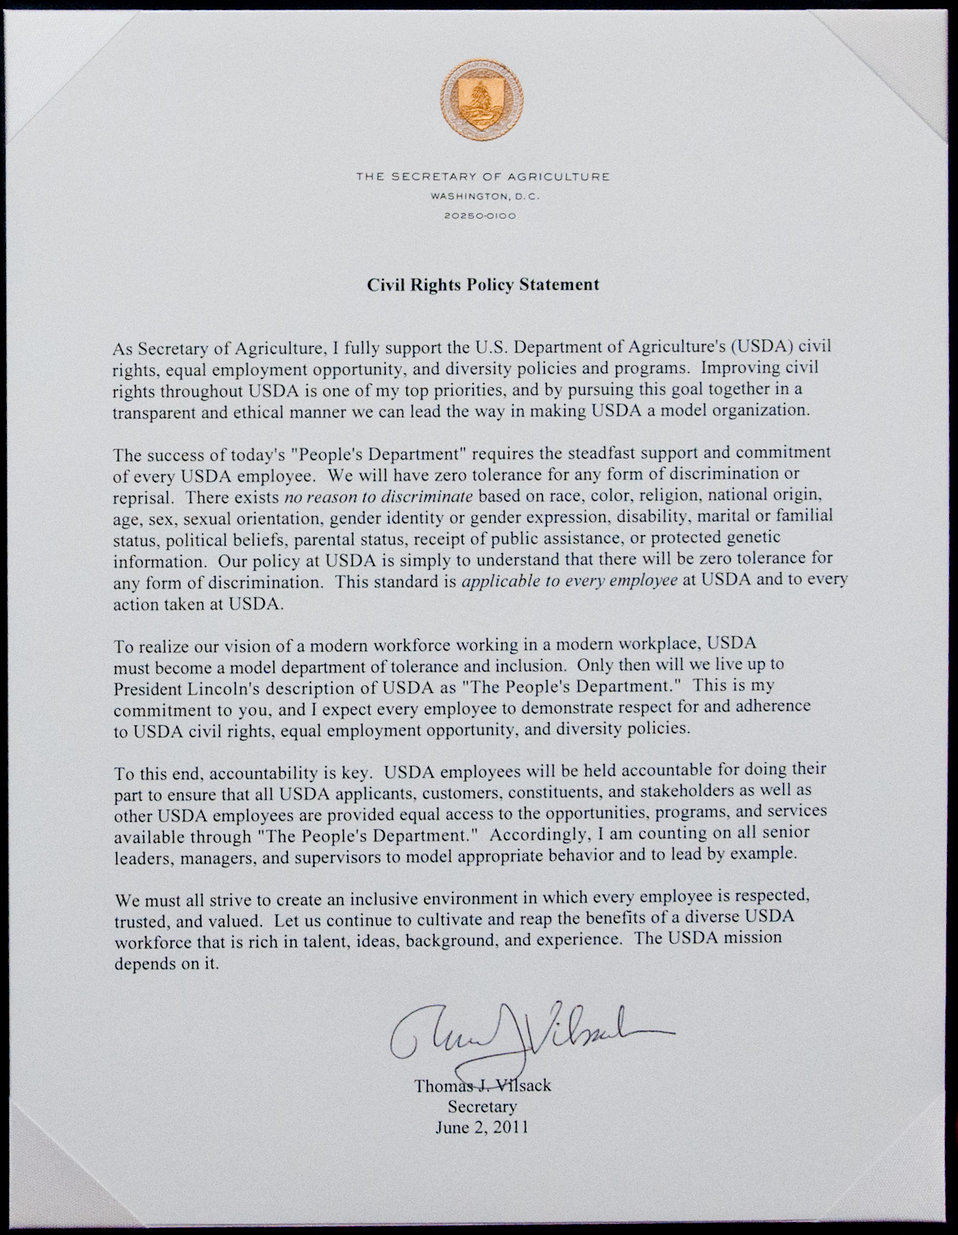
U.S. Department of Agriculture (USDA) Civil Rights Policy Statement signed by Agriculture Secretary Tom Vilsack during the Lesbian, Gay, Bisexual and Transgender (LGBT) Pride Observance Program, on Thursday, June 2, 2011 in the Jefferson Auditorium, Washington, DC.